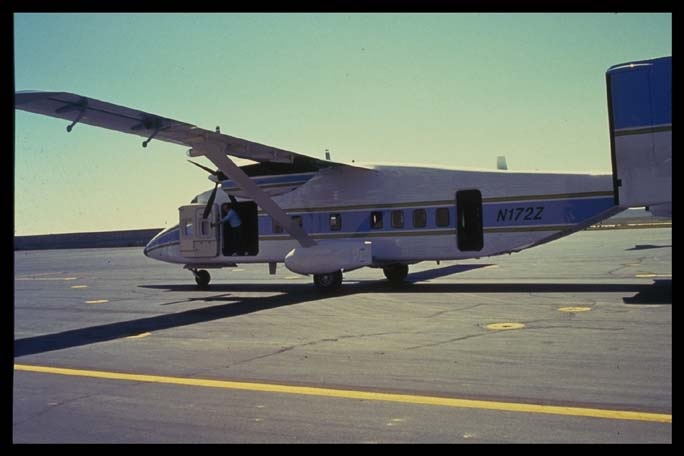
Smokejumper Aircraft